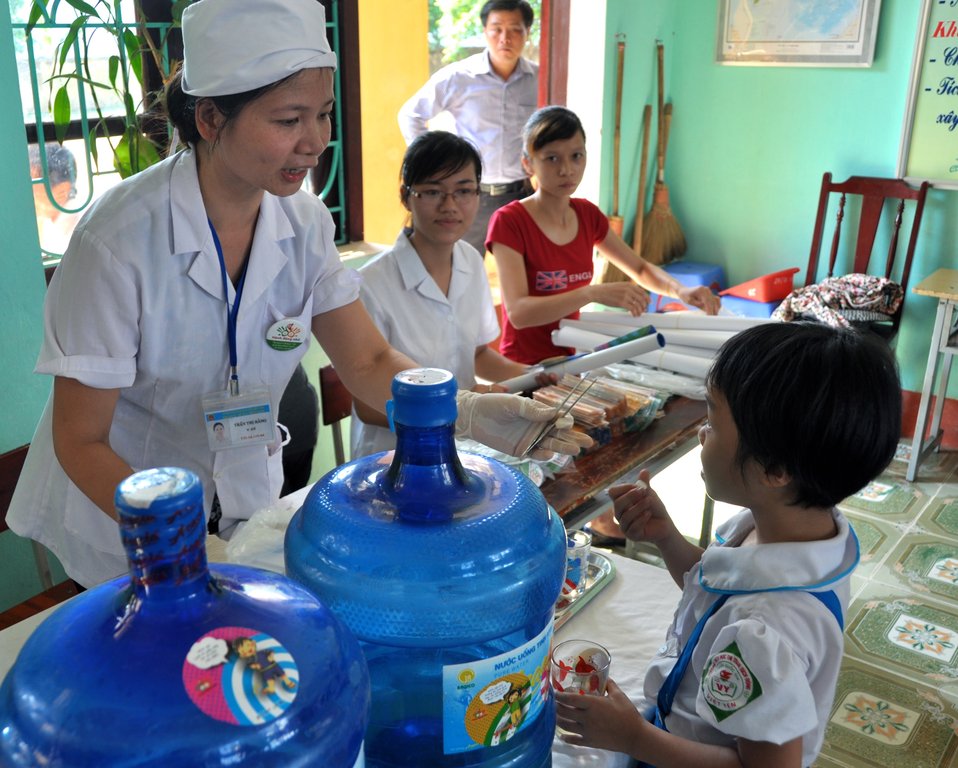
USAID supports deworming education and medication distribution in Bac Giang Province

May 20, 2013